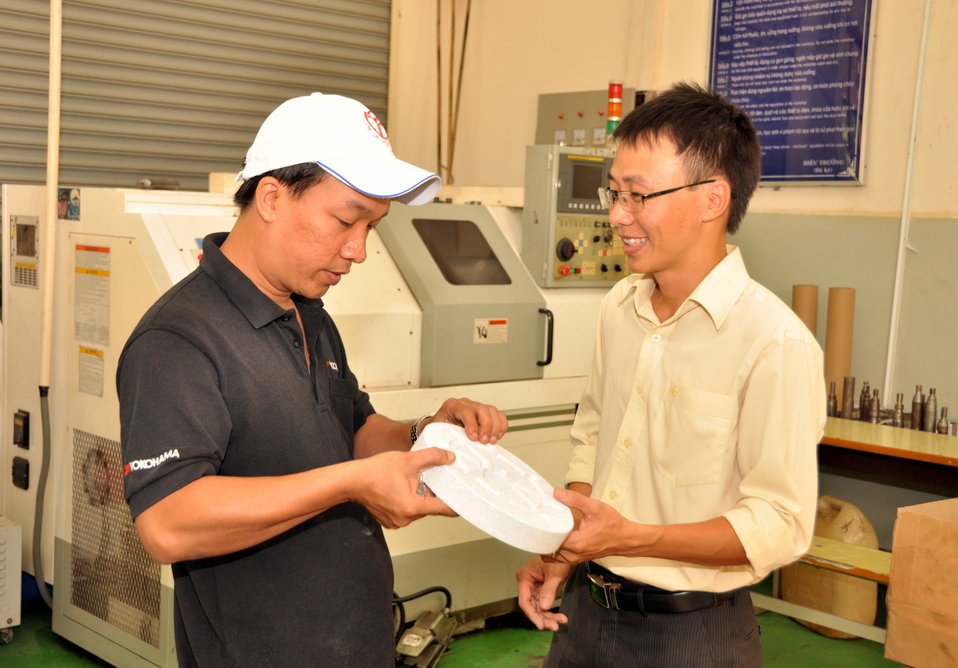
Ho Chi Minh Vocational College of Technology

Vu The Manh, lecturer of Mechanical Engineering Faculty at the Ho Chi Minh Vocational College of Technology

Photo: January 11, 2013, Richard Nyberg @USAIDVietnam